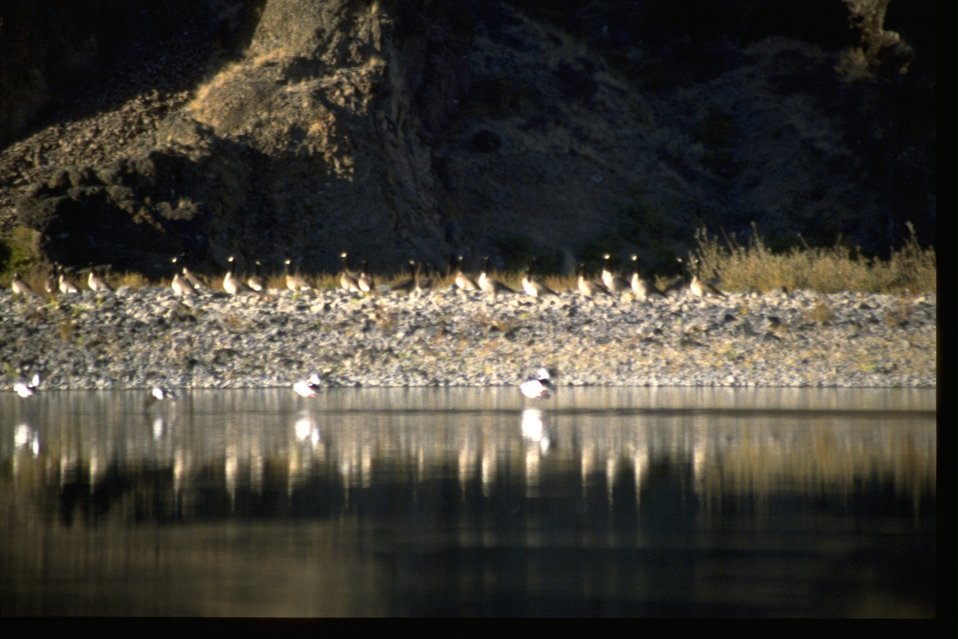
Geese on a rocky shore of the John Day River.